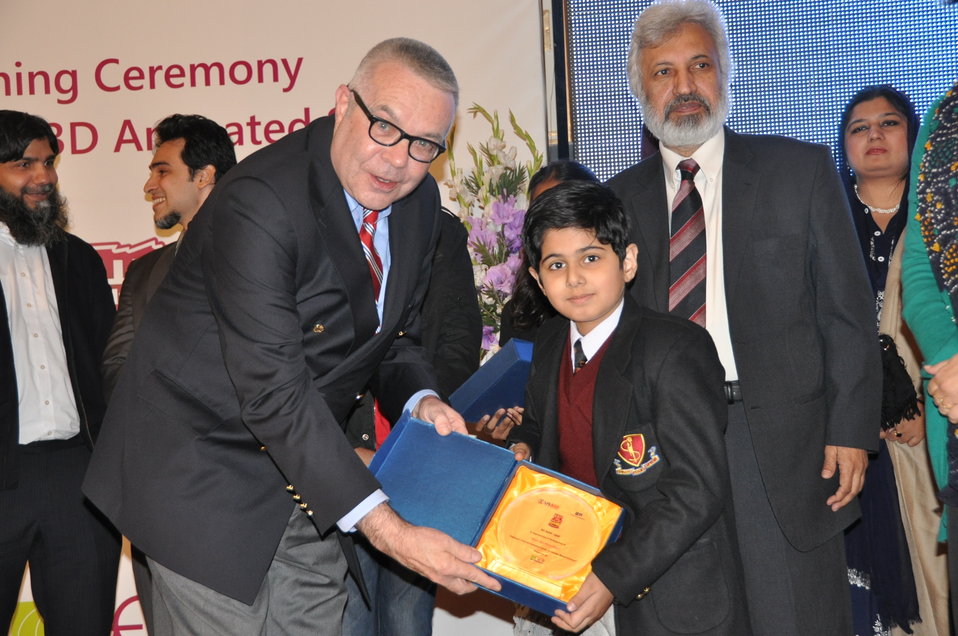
U.S. Deputy Chief of Mission Ambassador Richard Hoagland presenting memento to an attendee